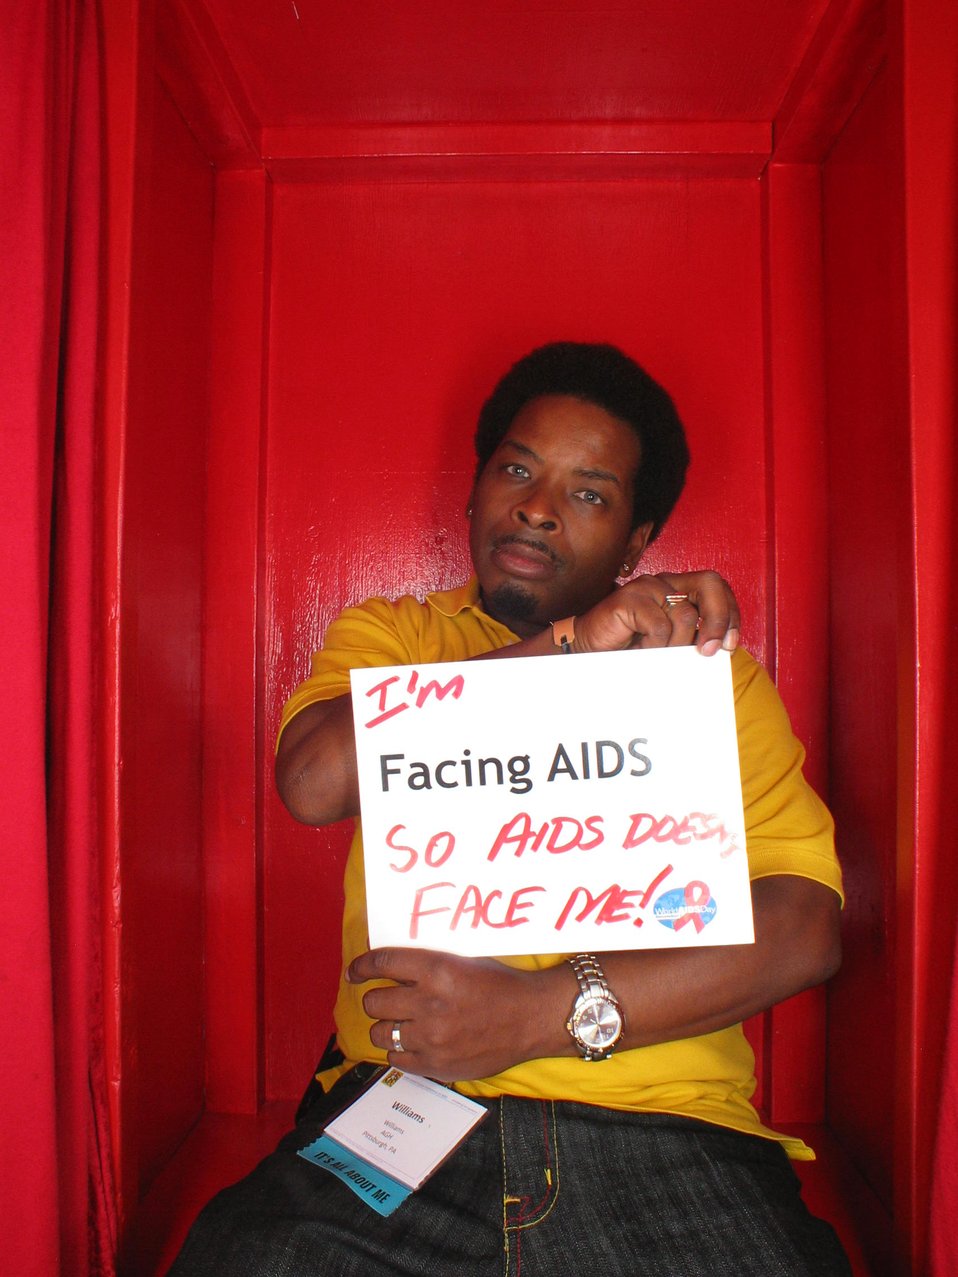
I'm Facing AIDS so AIDS doesn't face me!